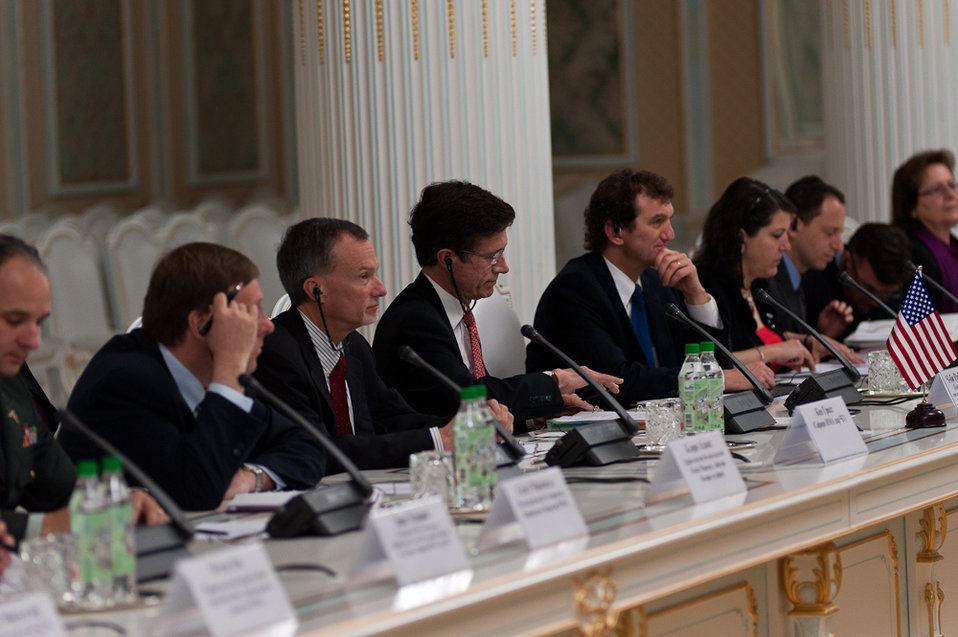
Assistant Secretary Blake Leads U.S. Government-Interagency Delegation to U.S.-Tajikistan Annual BIlateral Consultations

U.S. Assistant Secretary of State for South and Central Asian Affairs, Robert O. Blake, Jr. leads the U.S. government-interagency delegation to the second U.S. - Tajikistan Annual Bilateral Consultations in Dushanbe, Tajikistan, April 11 - 12, 2011. [Damian Wampler/ State Department photo/ Public Domain]